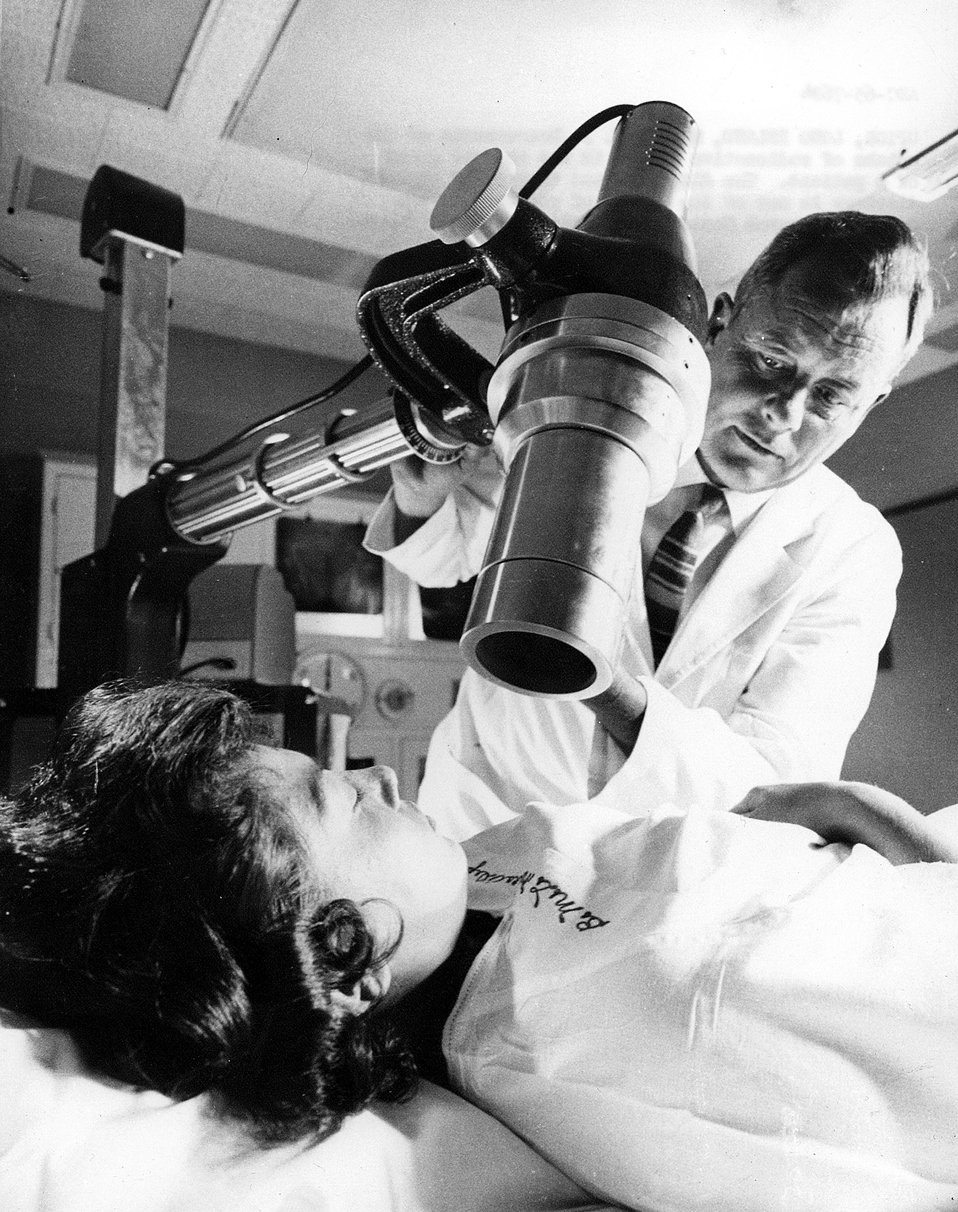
Measurement of the uptake of radioactive iodine in the thyroid gland of a patient.
c.1965